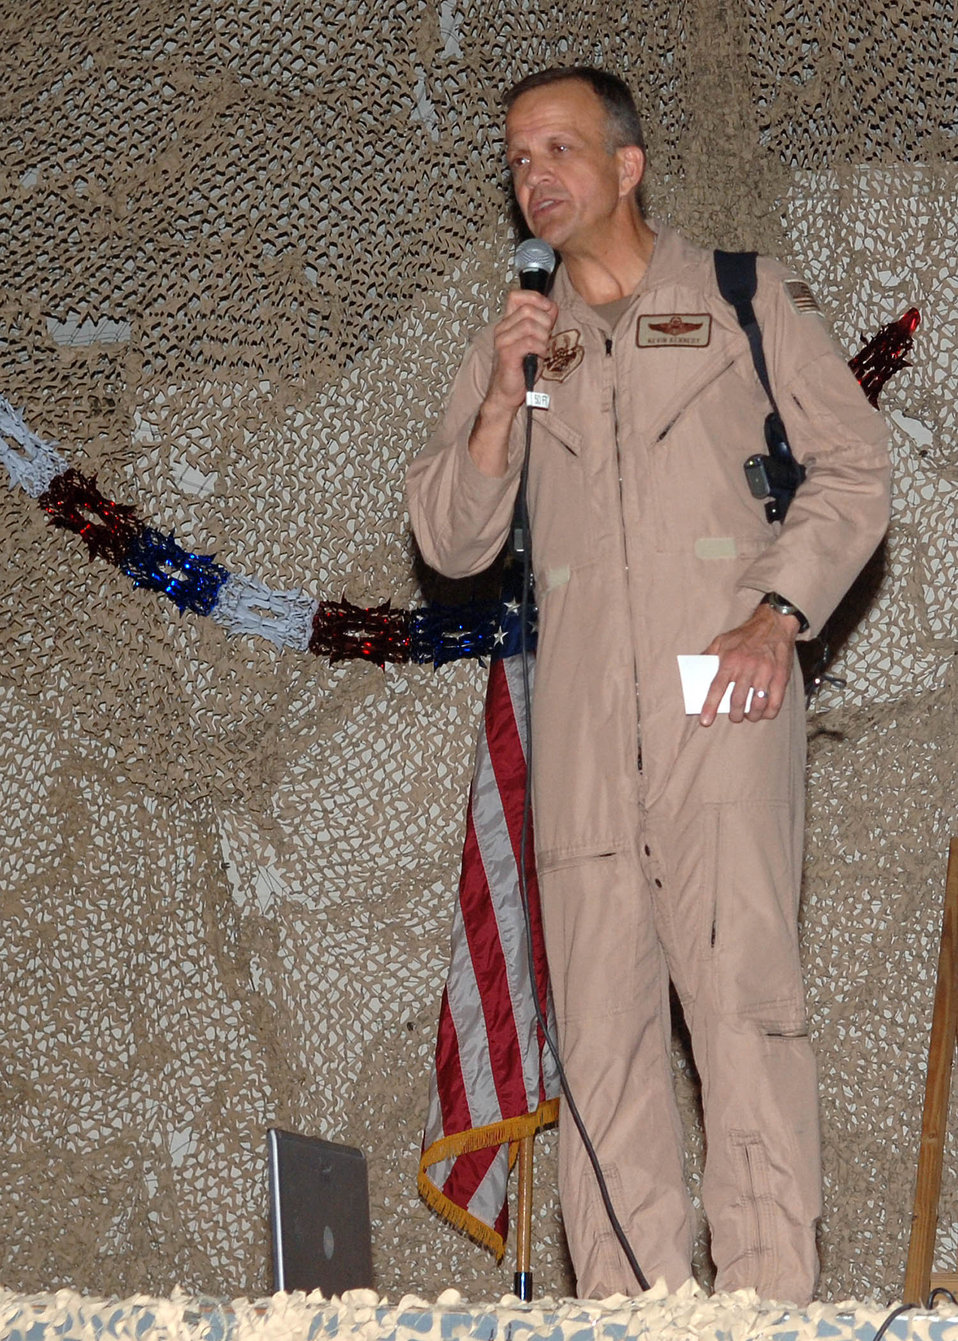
Bagram Airmen celebrate Air Force's 60th birthday

Maj. Gen. Kevin J. Kennedy was the guest speaker at the Air Force's 60th Anniversary Ball held Sept. 8 at Bagram Air Base, Afghanistan. The general spoke to the Airmen of the importance of their mission and the important role they play in the heritage of the Air Force. General Kenney is the director of the Air Component Coordination Element, from Kabul, Afghanistan.